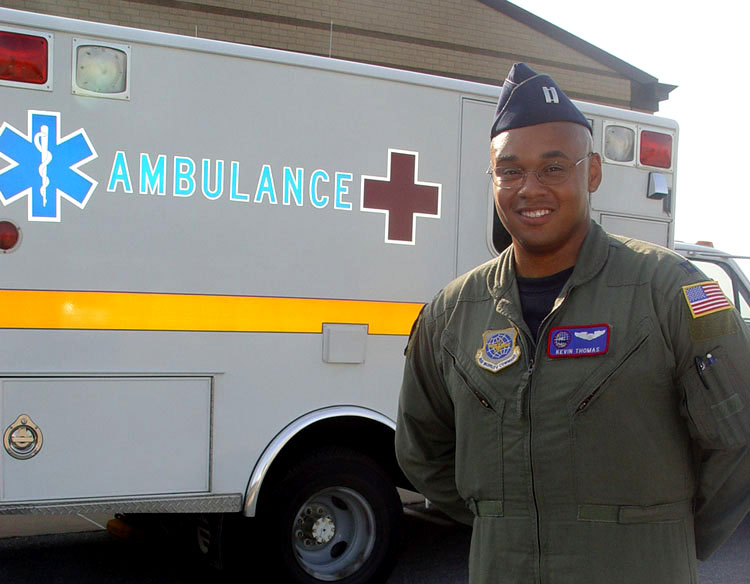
McConnell pilot stabilizes girl after accident

MCCONNELL AIR FORCE BASE, Kan. -- Capt. Kevin Thomas used prior job knowledge to help a young girl who was hit by a car July 28. Before joining the Air Force, he worked as an emergency medical technician in Virginia. He is assigned to the 349th Air Refueling Squadron here.